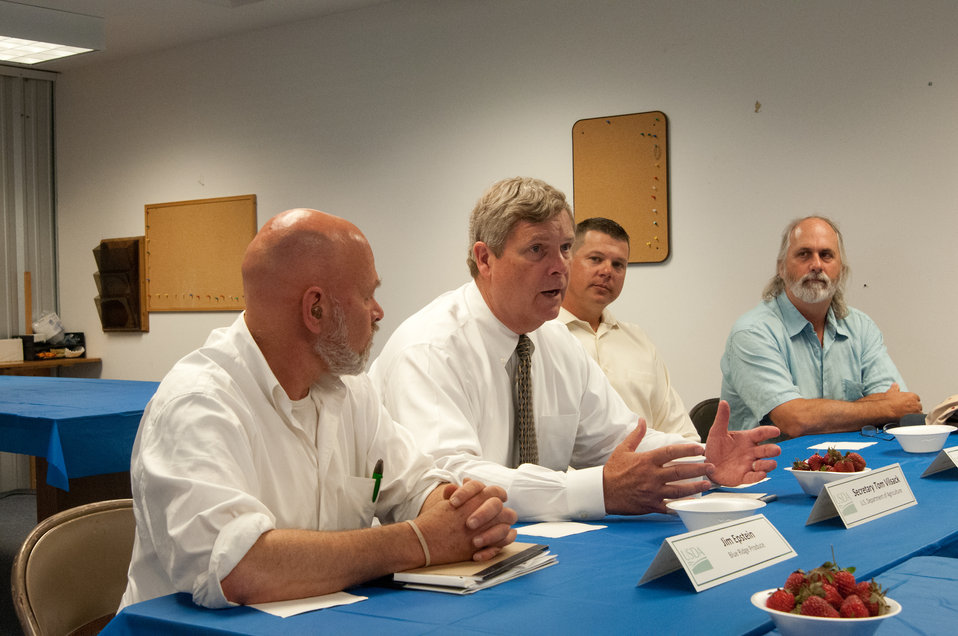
(L to R) Blue Ridge Produce Jim Epstein, Agriculture Secretary Tom Vilsack, Blue Ridge Produce Mark Seale and livestock and forestry producer Robert Bradford meet with local producers to listen and answer their questions at Blue Ridge Produce in Elkwood, VA on Thursday May 30, 2013. Blue Ridge Produce is a local food hub aggregating Virginia-grown fruits and vegetables for sale to wholesale customers in the Capitol region and strives to build a value-based relationship with Virginia growers of all sizes by handling the marketing and logistics to get their produce from farm to customer.